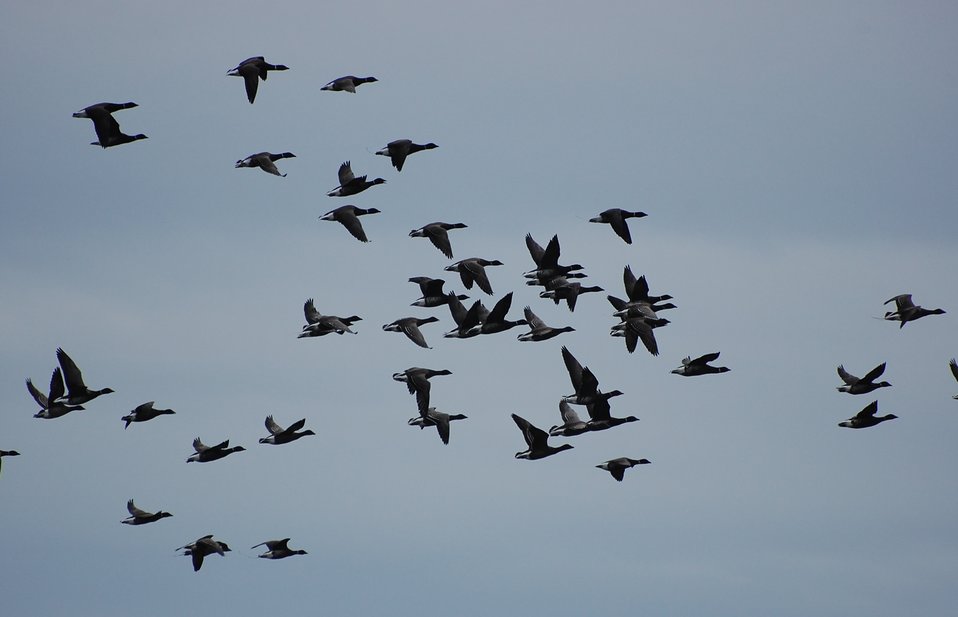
Brant at Izembek Lagoon

Izembek National Wildlife Refuge